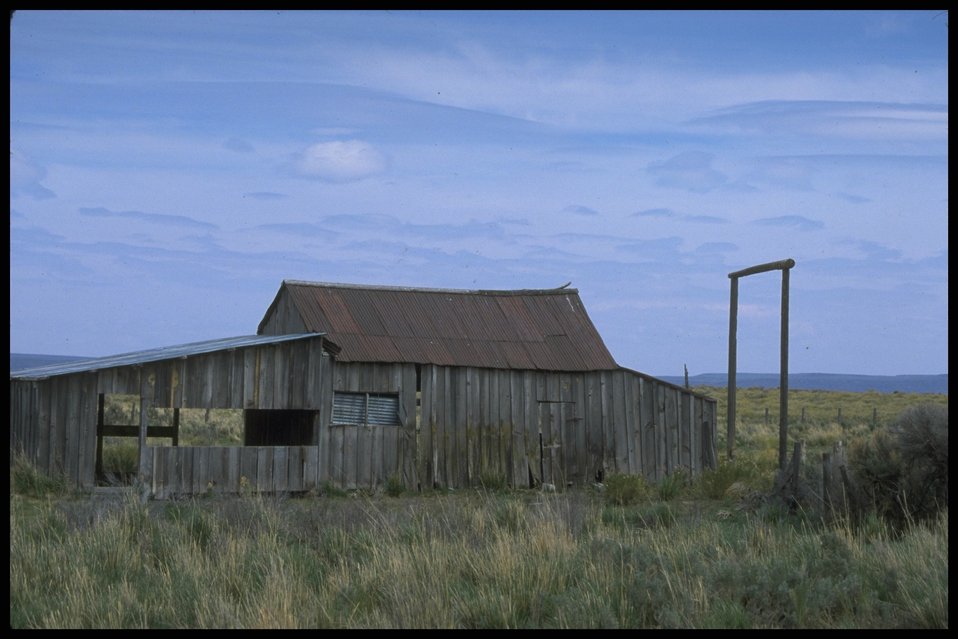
Lakeview District, Shirk Ranch. Old Barn.